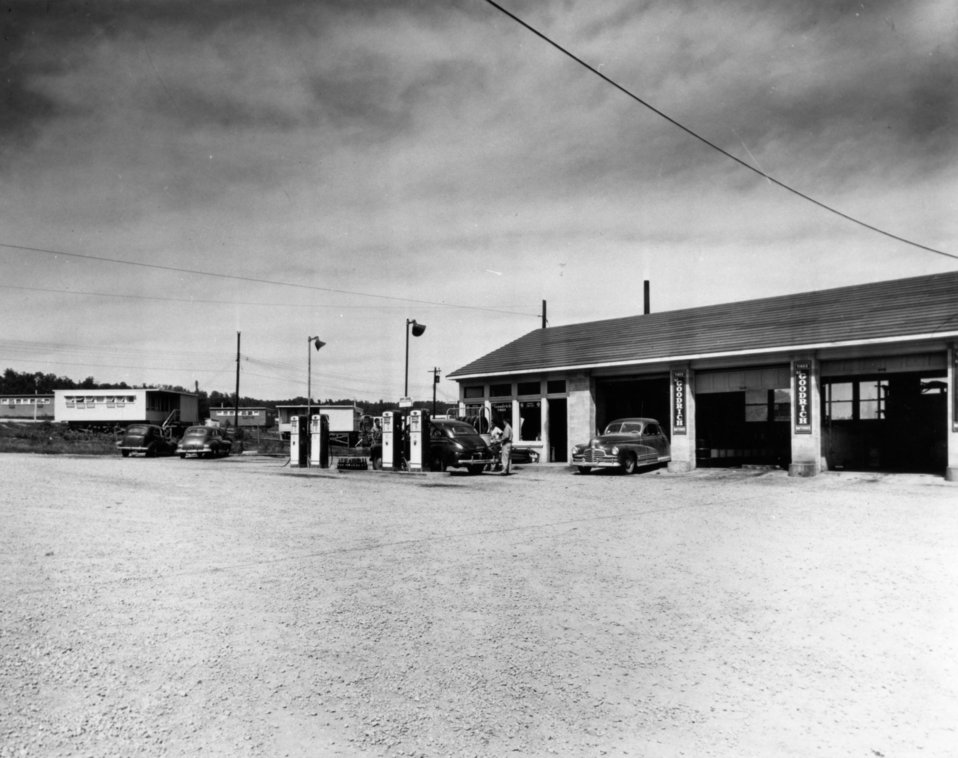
Business activity at Oak Ridge